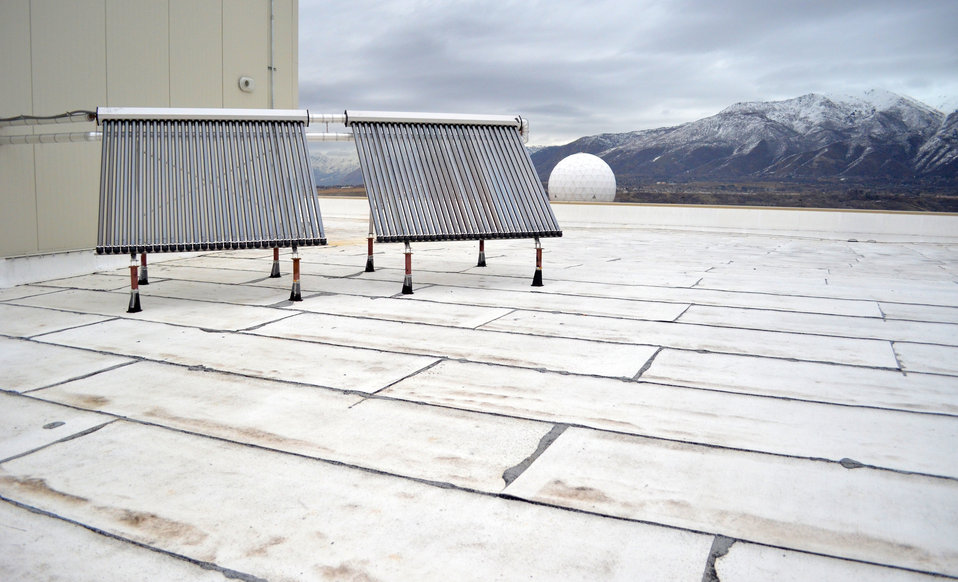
F-22, F-35 aircraft facilities near completion at Hill Air Force Base

Solar panels on the roof of the nearly complete system support facility for the F-22 and F-35 aircraft, shown Feb. 14, 2014, are just one of many features that will make the building at Hill Air Force Base, Utah, LEED-Silver. Under the LEED program, which stands for Leadership in Energy and Environmental Design, projects are recognized for efficient design and construction in categories including sustainable sites; water efficiency; energy and atmosphere; materials and resources; indoor environmental quality; and innovation in design. The U.S. Army Corps of Engineers Sacramento District is overseeing construction of the 36,500-square-foot facility, which will serve as an administration and operations support building to the adjacent F-22 and F-35 industrial facilities on base. The facility is scheduled to be complete early 2014.